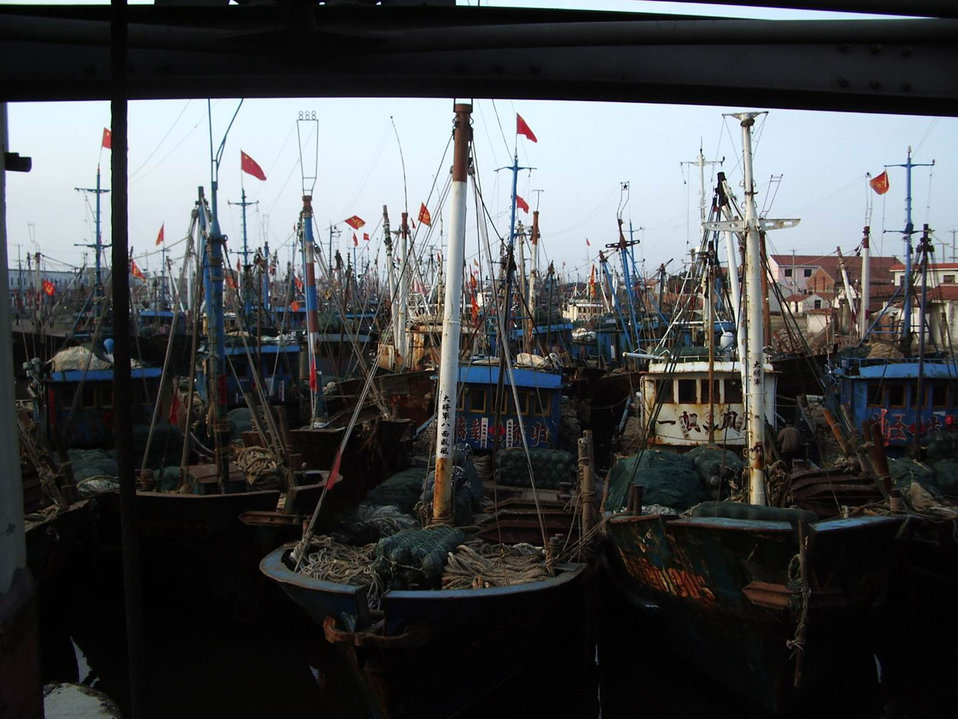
Fishing boats in port.